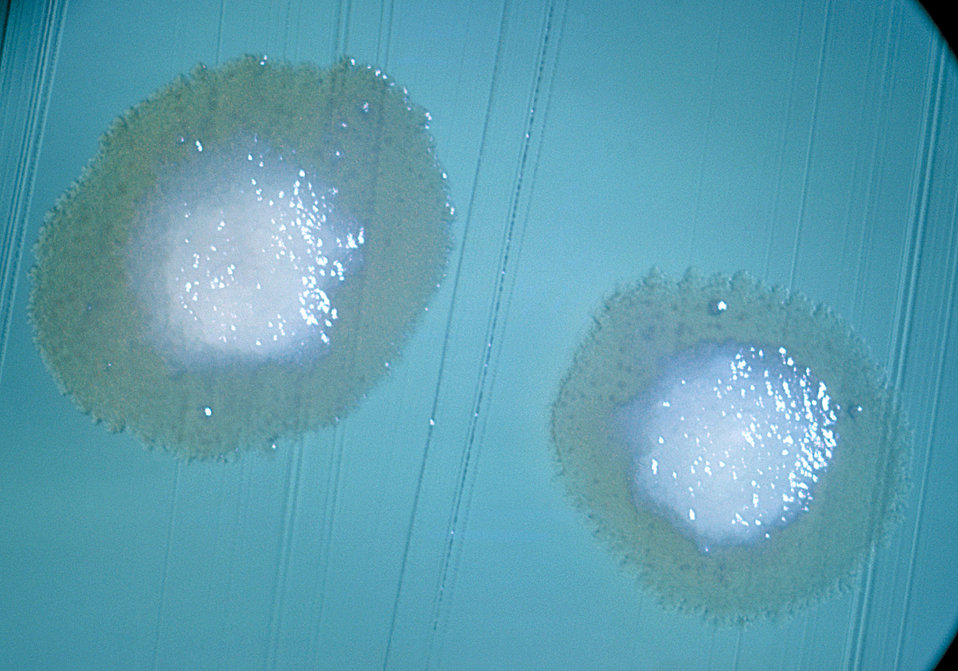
A BHI agar plate culture of Actinomyces sp., strain X-573, at 7 days, incubated anaerobically.